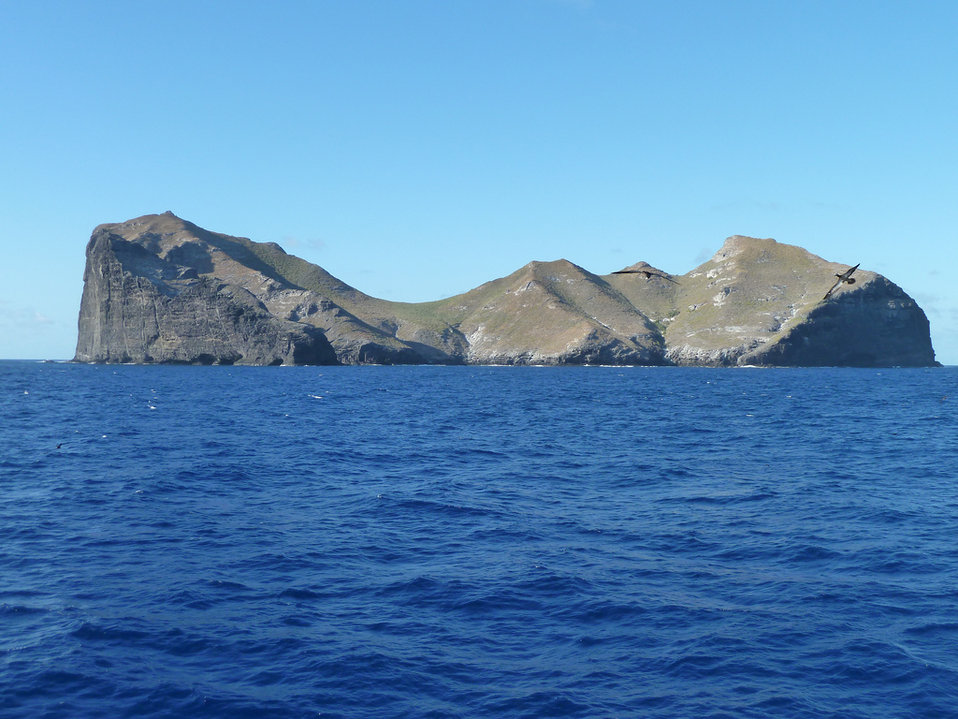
approaching Nihoa Island

Sept. 3, 2011 Photo: G. Wallace/American Bird Conservancy